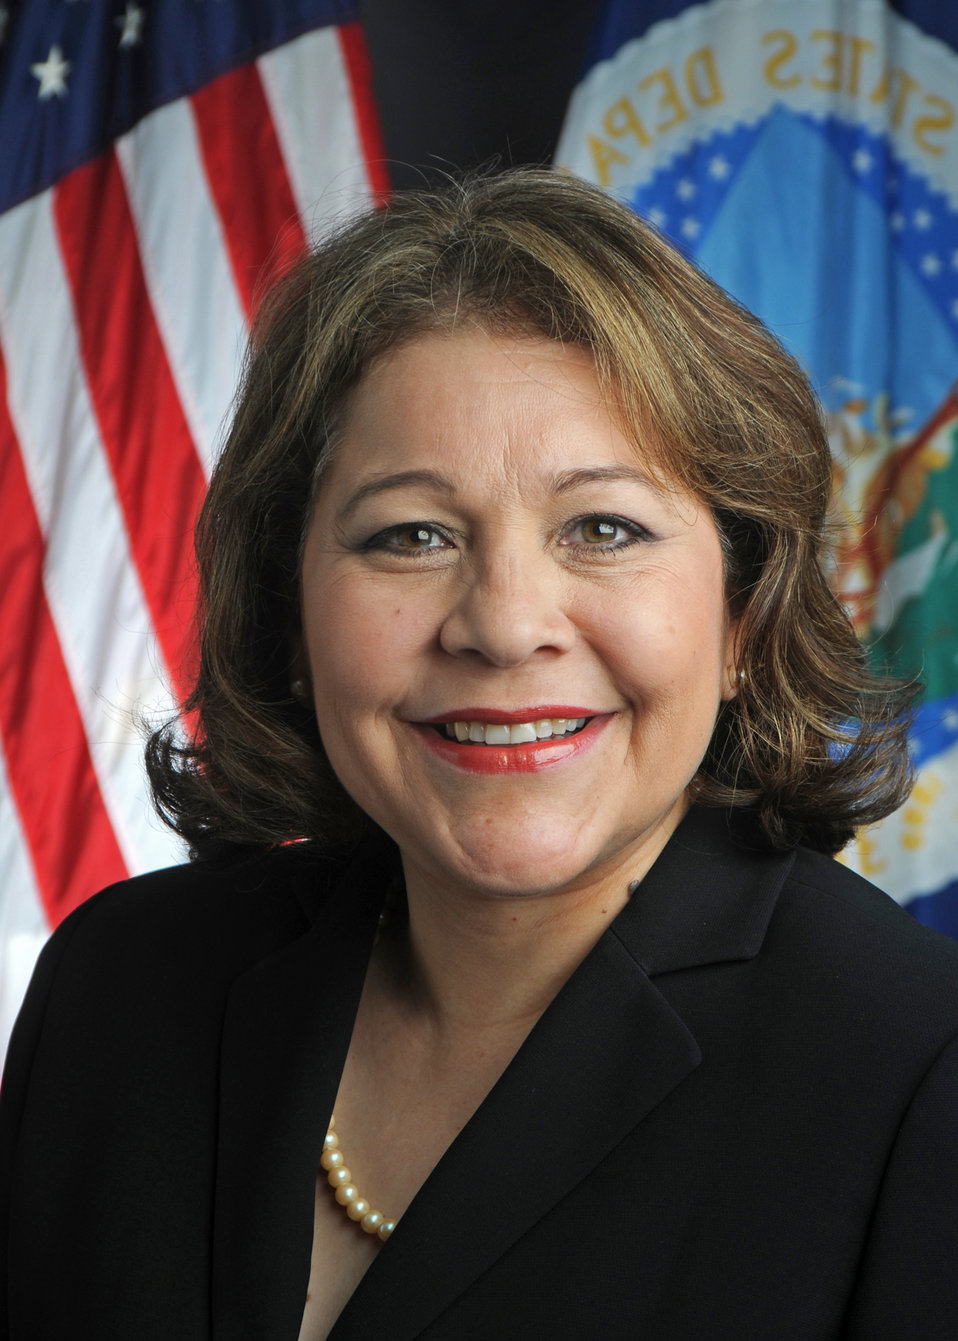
09di1099-006 Administrator Housing and Community Facilities Programs Tammye H. Trevino

Administrator Housing and community facilities programs Tammye H. Trevino portrait.